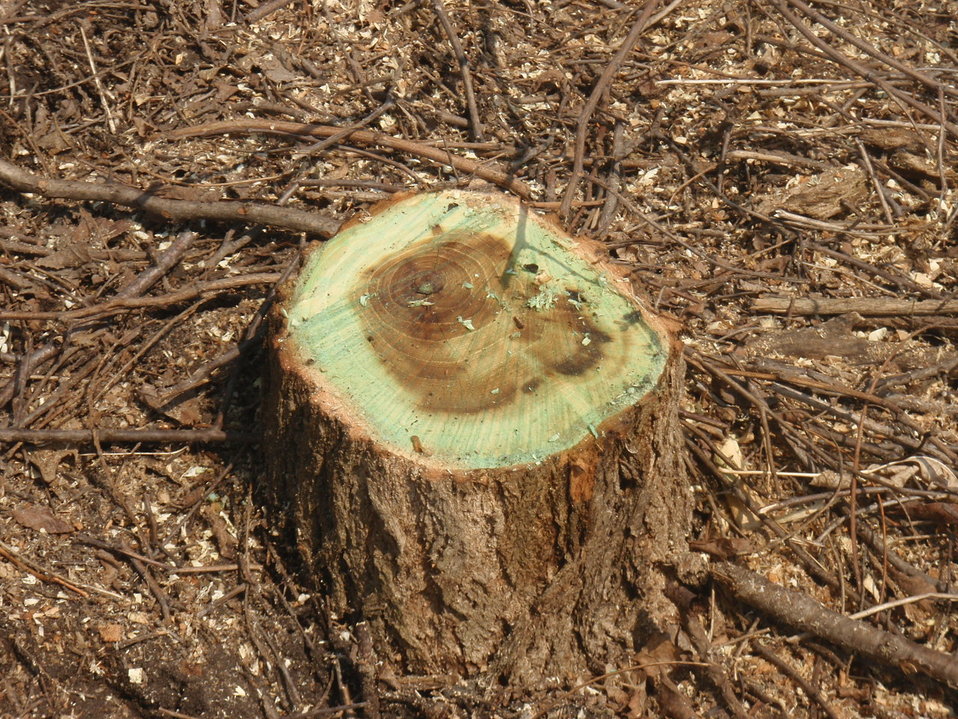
Color Shows Treatment

The chemical is colored to help crews see which stems have been treated.